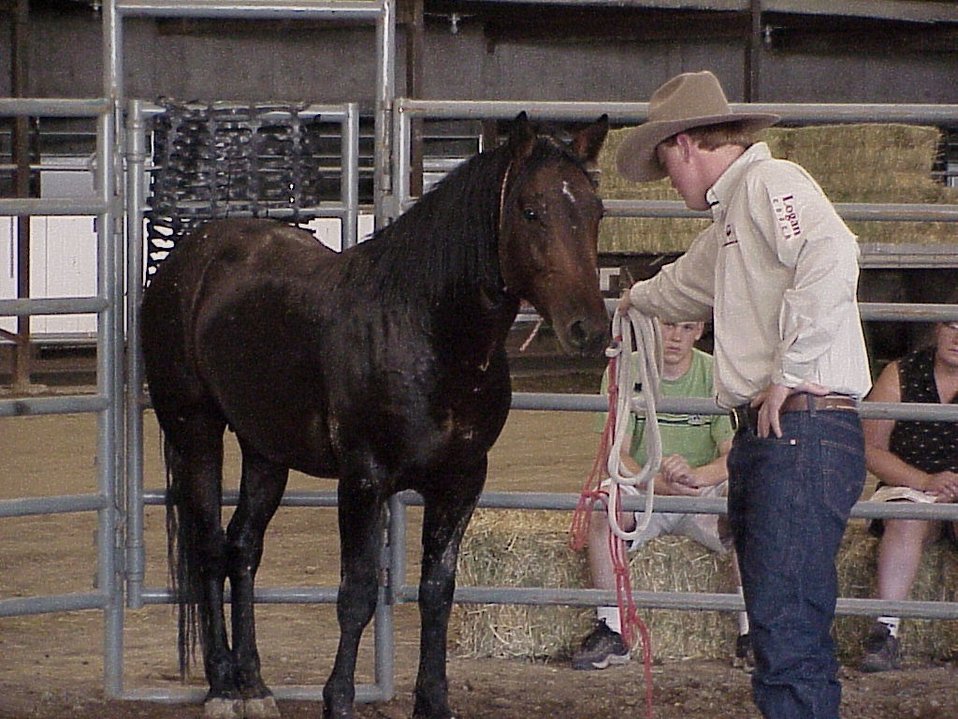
Horse Gentler Mario Johnson Lewiston Wild Horse and Burro Adoption Program Auction WHB indoor auction Cottonwood Field Office UCSC Upper Columbia Salmon Clearwater District